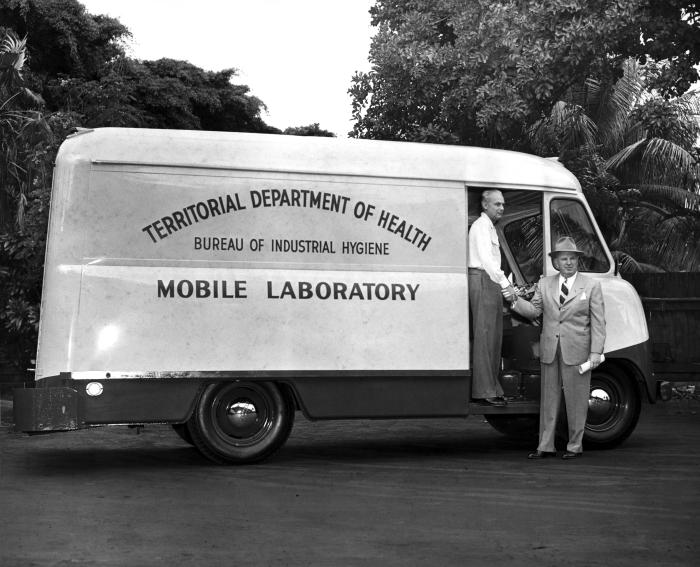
This 1952 photograph provided by the Center for Disease Control's (CDC), National Institute for Occupational Safety and Health (NIOSH), depicted two public health workers from the Territorial Department of Health, Bureau of Industrial Hygiene, and one of its Mobile Laboratory vehicles in Hawaii. The convenience of bringing the public healthcare system directly to the population immeasurably facilitates the delivery of proper healthcare to the average person, especially in rural areas.